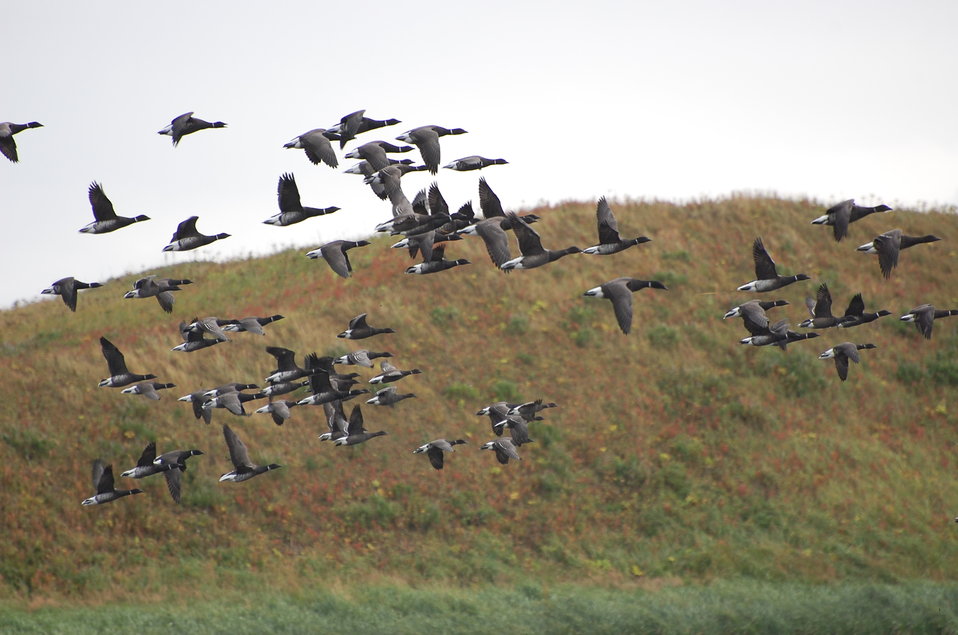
Brant at Izembek Lagoon

Izembek National Wildlife Refuge